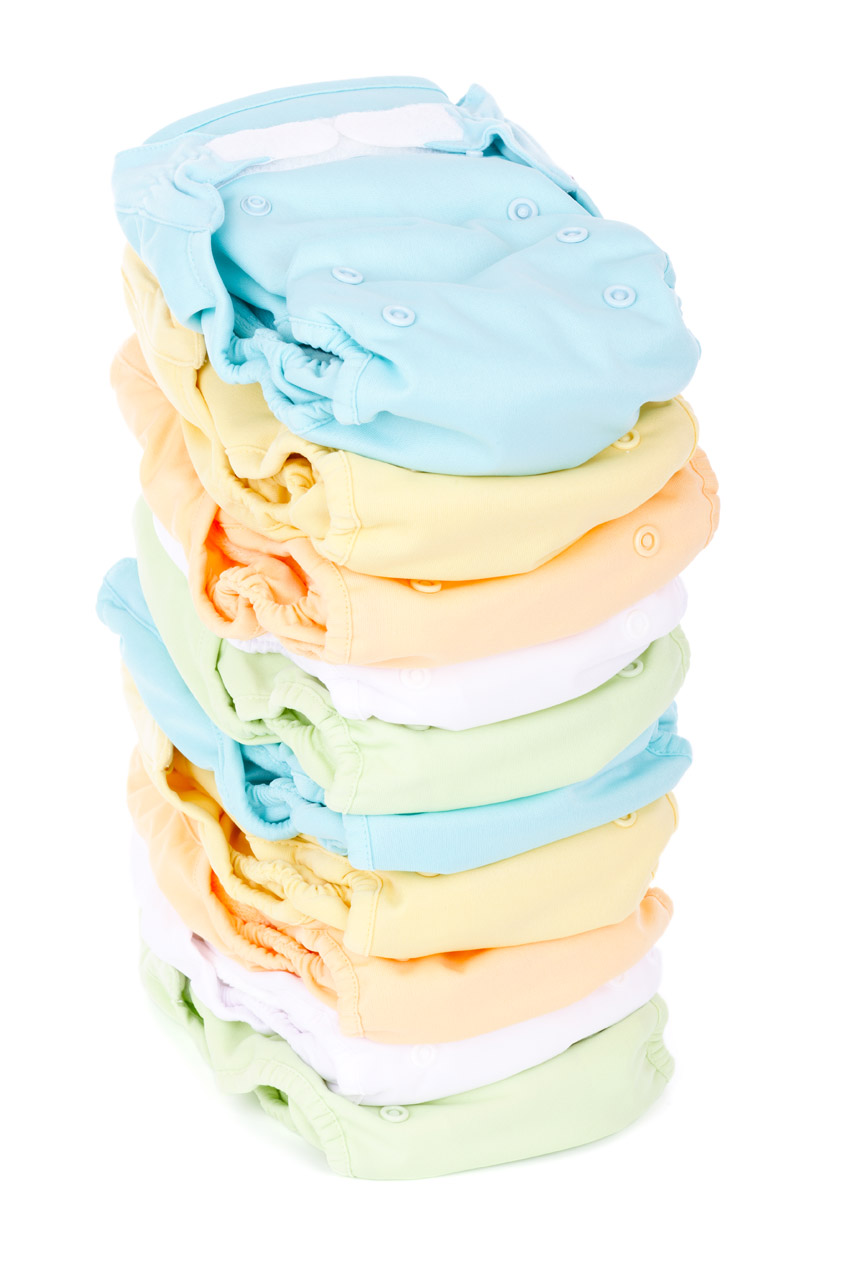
Stack of nappies

Stack of diapers isolated on white background.